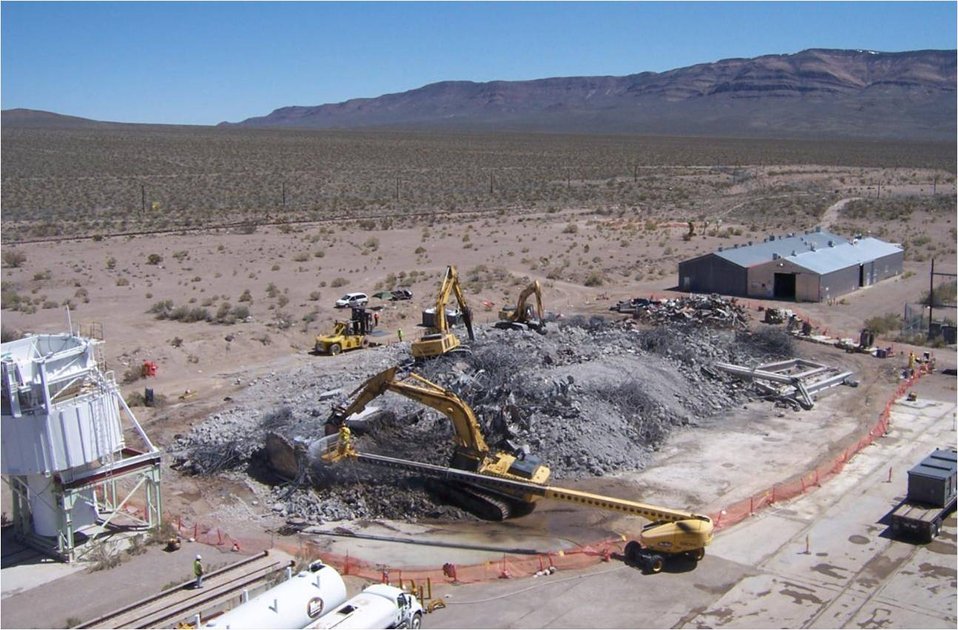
Recovery Act Boosts Environmental Cleanup at Nevada Site

Crews remove remaining debris at the Reactor Maintenance, Assembly, and Disassembly Facility.

The estimated $54 million in Recovery Act money allocated to NNSS has accelerated soil remediation, building demolition, and includes about $10 million for waste disposal. The funding is moving NNSS toward its cleanup goals faster and increasing its capabilities to dispose nuclear waste originating throughout the DOE Complex.